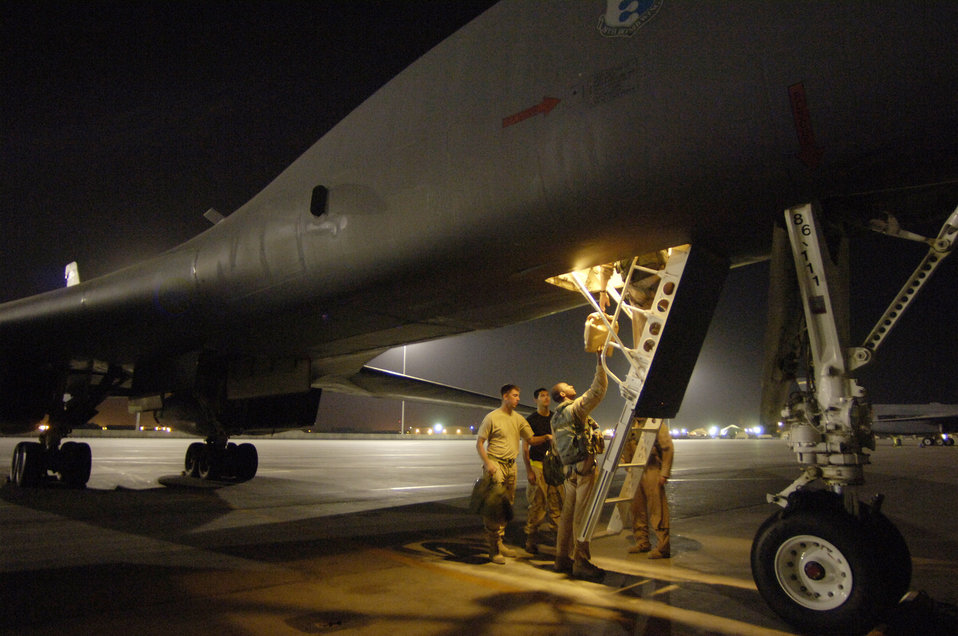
Lancer preparations

Capt. Cedric Harper, Senior Airman Kyle Stackpole and Airman 1st Class Justin Bailey load supplies into a B-1 Lancer for a 12-hour sortie over Southwest Asia Sept. 28. Captain Harper is a B-1 weapons systems officer and Airmen Stackpole and Bailey are crew chiefs. They are deployed from Ellsworth Air Force Base, S.D.